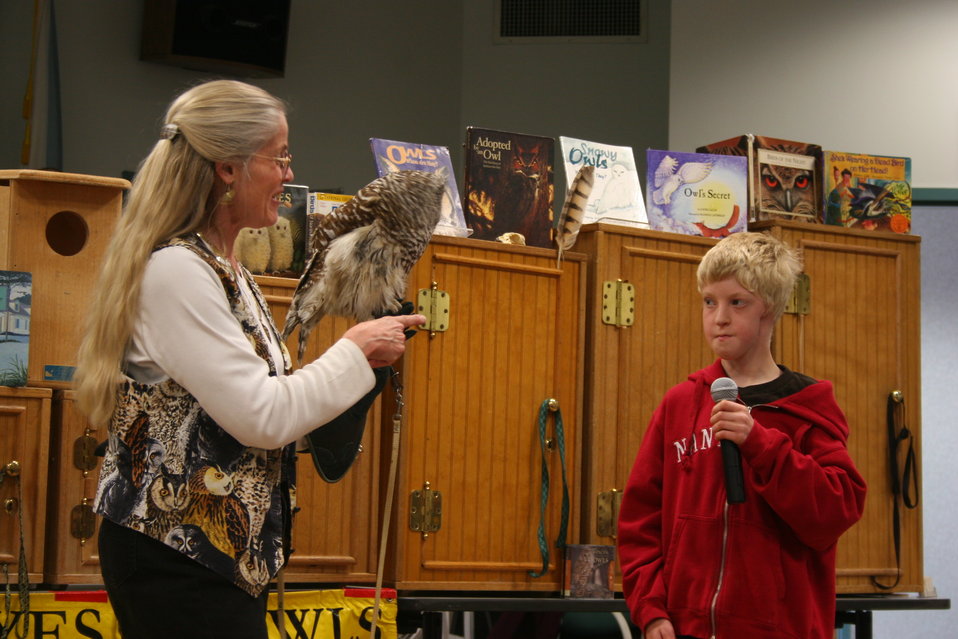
Great Horned Owl

Live bird demonstration